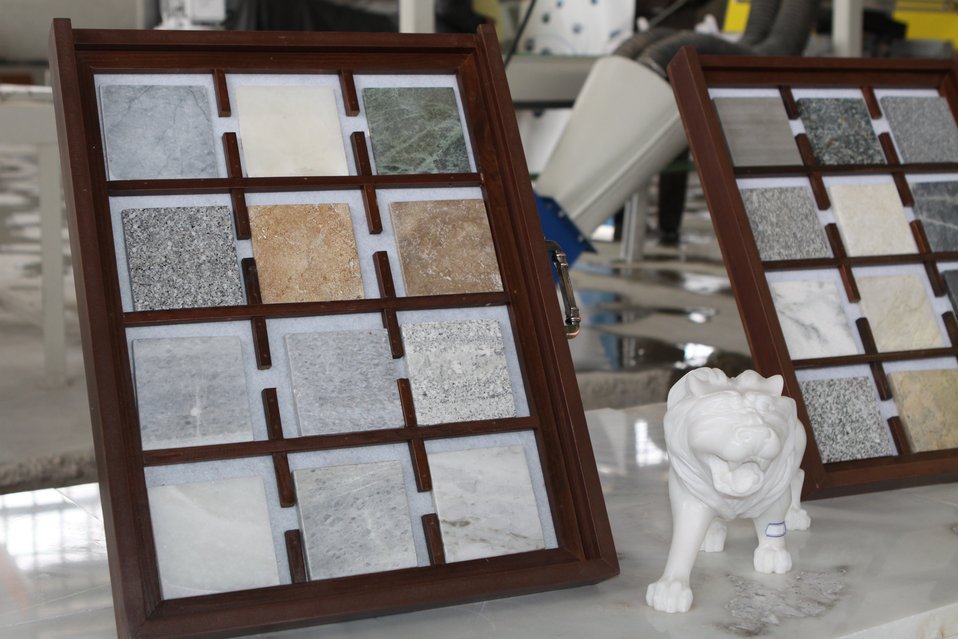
100525 Hirat Marble Conference 133